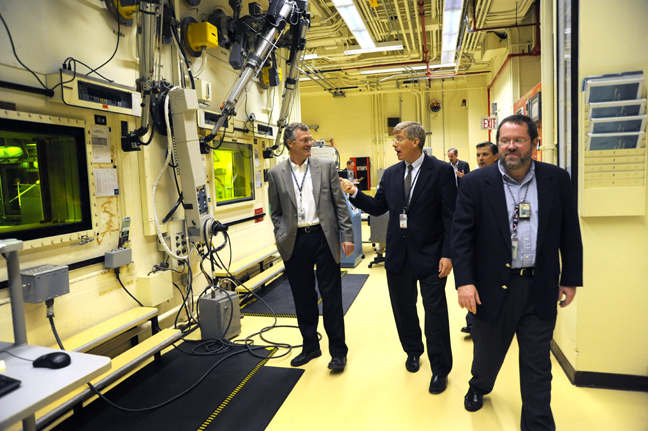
P-6250-10 72dpi

Deputy Secretary Poneman visits the Hot Fuel Examination Facility at the Materials and Fuels Complex. These hot cells are used to examine the performance of nuclear fuel after it has been irradiated in a reactor.